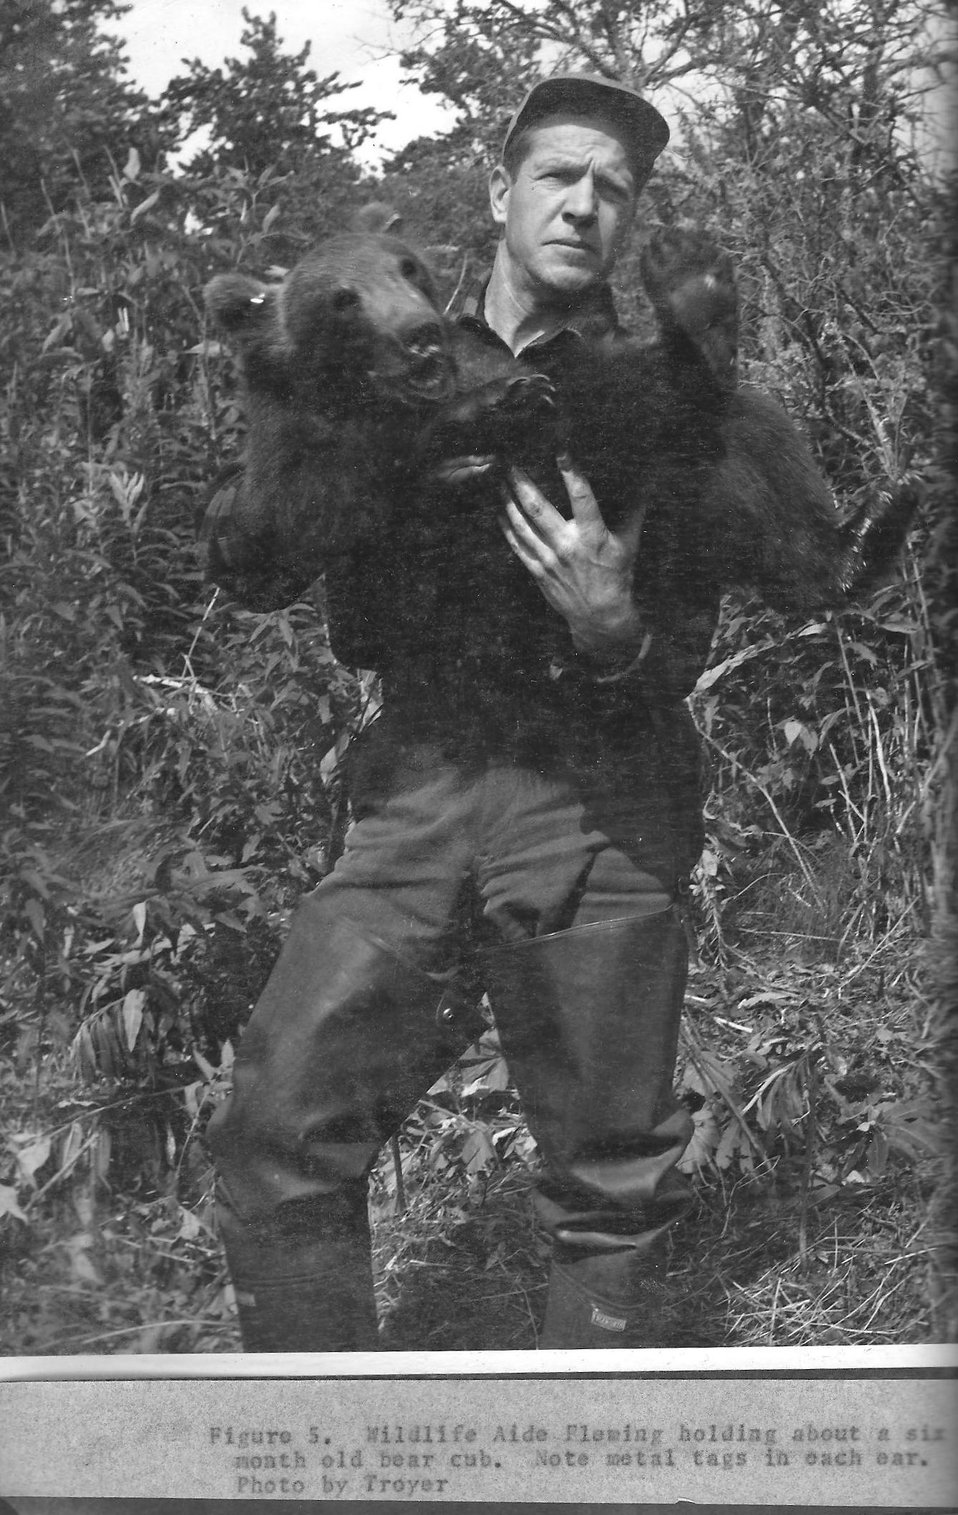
(1964) Bear Cub Wrangler

Credit: USFWS

Source and Contact: Kodiak National Wildlife Refuge